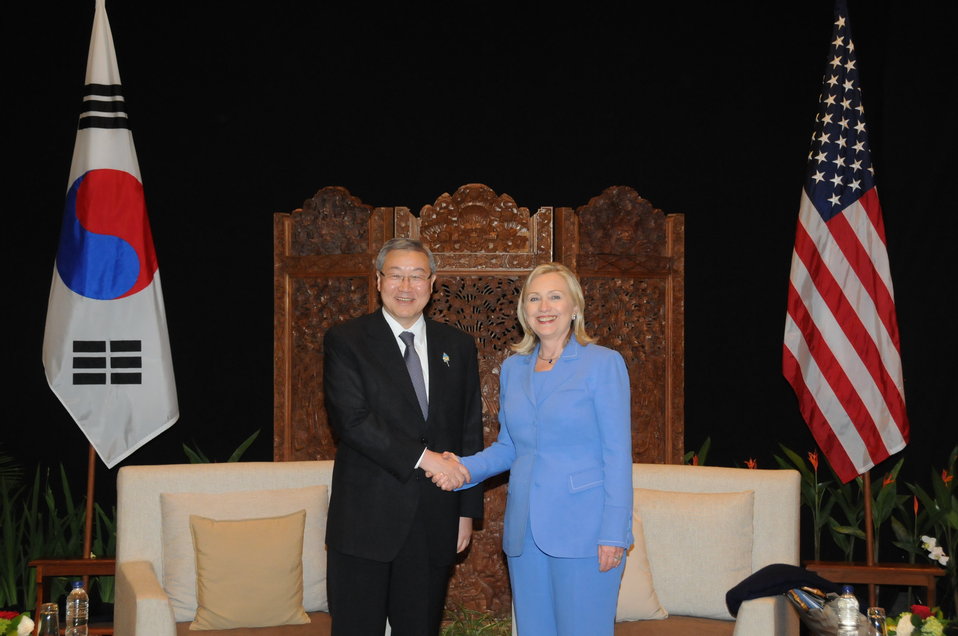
Secretary Clinton Meets With South Korean Foreign Minister Kim Sung-Hwan

U.S. Secretary of State Hillary Clinton, right, meets with Foreign Minister of the Republic of Korea (ROK) Kim Sung-Hwan, left, for a bilateral meeting in Bali, Indonesia, on July 23, 2011.